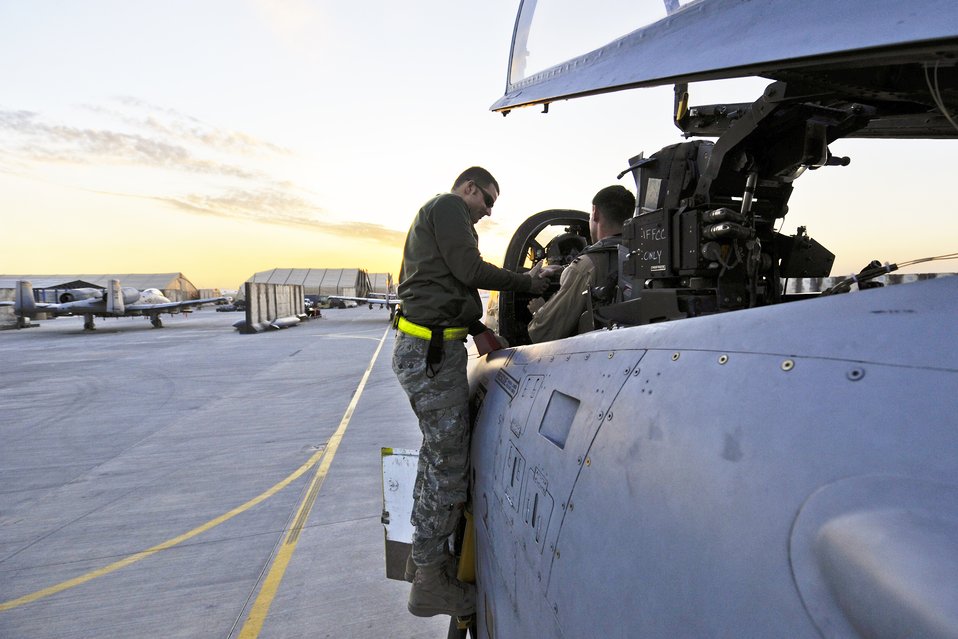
A-10 pilots prepare for mission

A crew chief with the 451st Expeditionary Maintenance Squadron conducts a final inspection on an A-10 Thunderbolt II from the 354th Expeditionary Fighter Squadron on Kandahar Airfield, Afghanistan, Dec. 27, 2009.